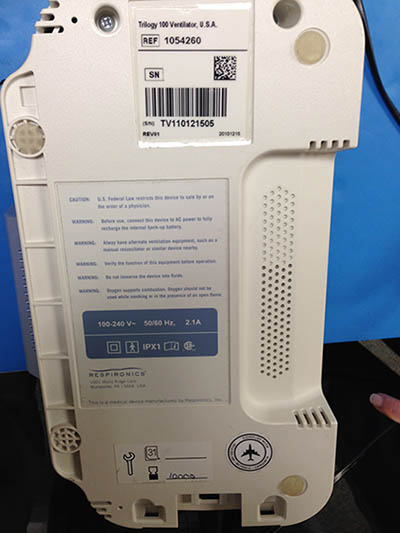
RECALLED – Trilogy Ventilators

February 19, 2014 – Product Recall – Philips Respironics Initiates Recall of Trilogy Ventilator.